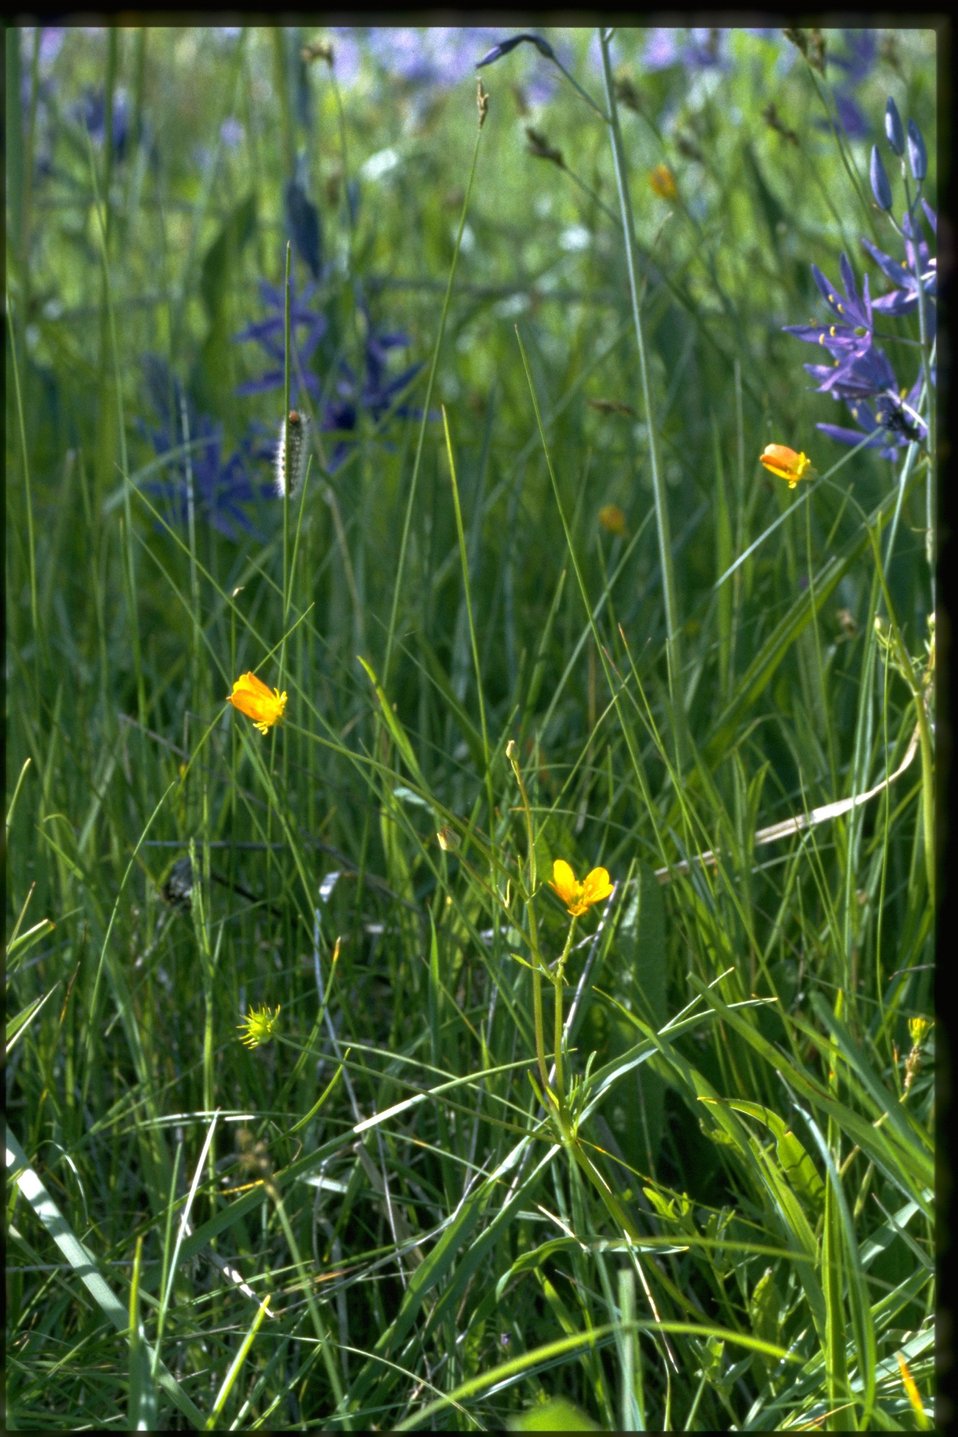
Farshot of Ranunculus.